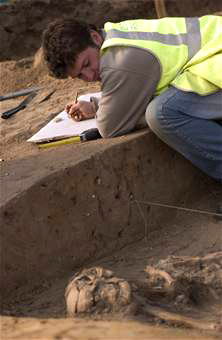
Skeletal remains discovered during dig at Mildenhall

John Sims, an archeologist for Suffolk County Council, England, sketches a drawing March 14 of human remains prior to removing the bones from Royal Air Force Mildenhall, England. The skeleton was found during an excavation where new base housing is planned to be constructed. It was estimated on site to be of 1st Century A.D. Roman descent between 1,900 and 2,000 years old.